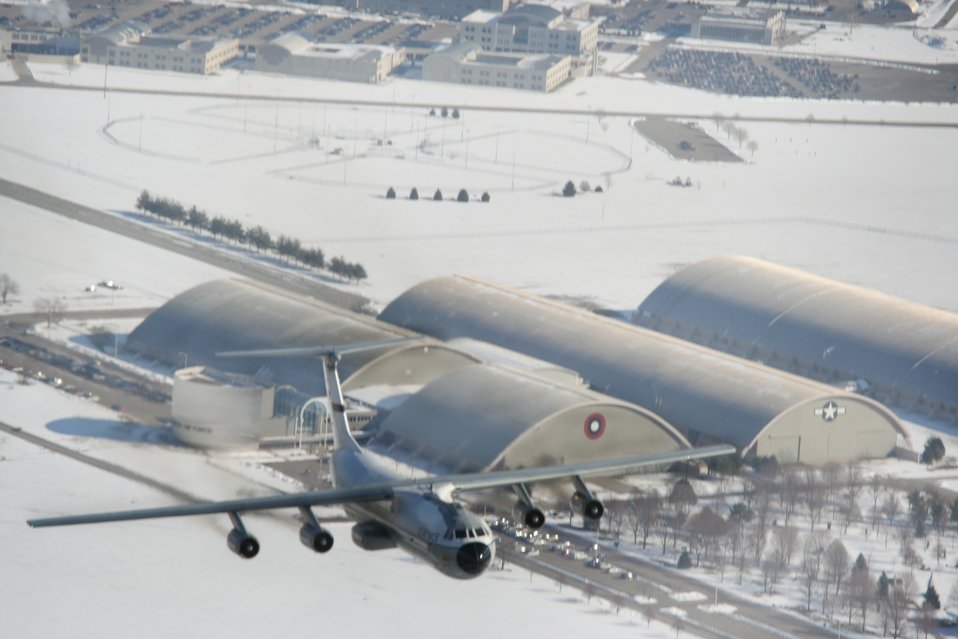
Hanoi Taxi

WRIGHT-PATTERSON AIR FORCE BASE, Ohio (AFPN) -- The